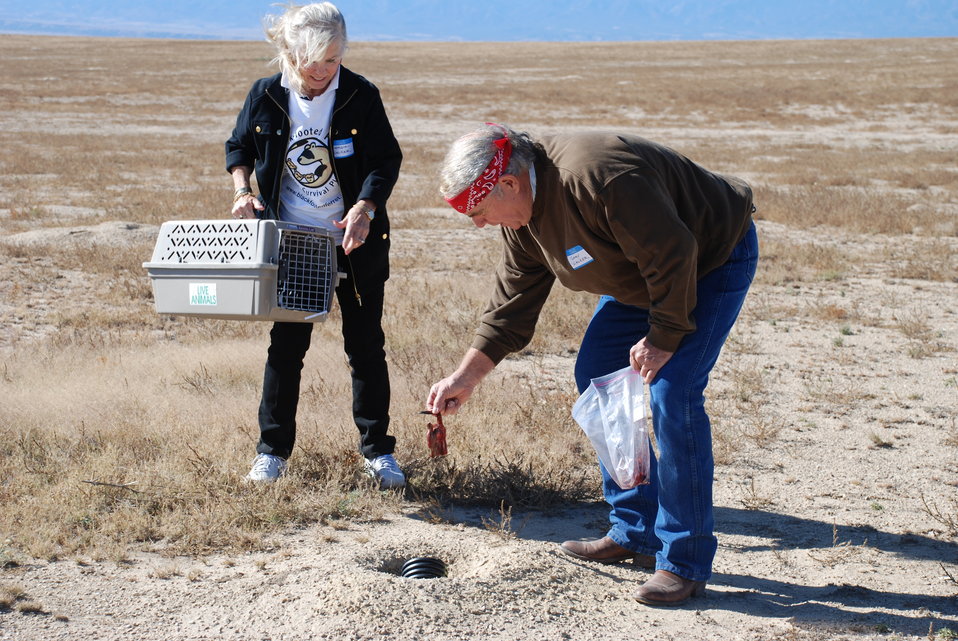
Black-footed Ferret Release

On Wednesday, October 30, 2013, thirty endangered black-footed ferrets were released onto cattle rancher Gary Walker's land, west of Pueblo, Colorado.

The release launched a potentially new way of preserving endangered species and was accomplished by way of a Safe Harbor Agreement (SHA). This SHA provides opportunities for private and Tribal landowners to volunteer their lands for reintroductions of this endangered species without affecting their land-use activities beyond mutually agreed-upon measures. It also extends these assurances to surrounding non-participating lands and other landowner interests. This SHA will be an important step in promoting the recovery of this iconic species.